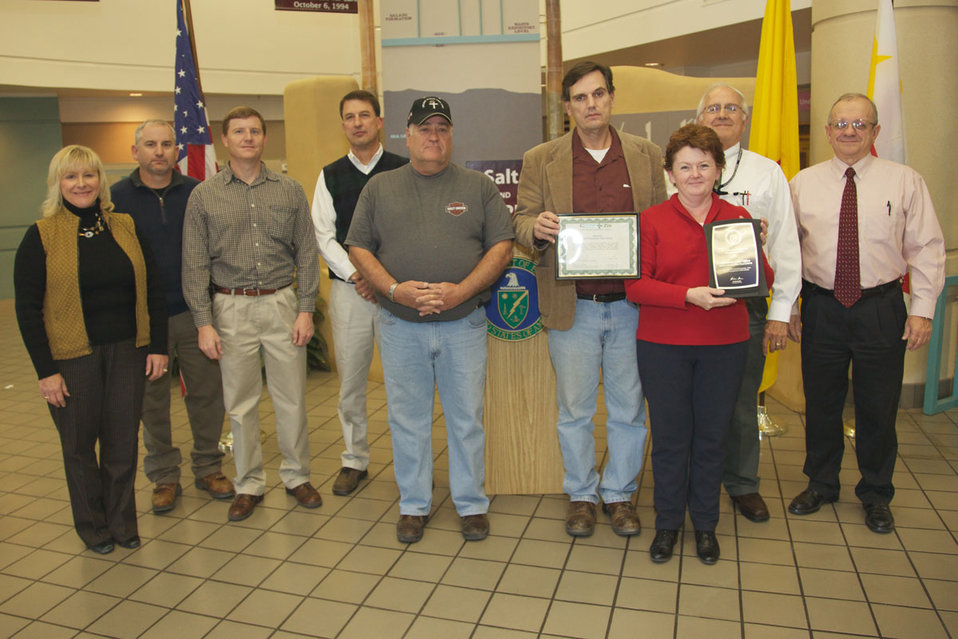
Environmental Awards at Carlsbad

New Mexico and DOE recently recognized the Carlsbad Field Office (CBFO) for environmental excellence in the Waste Isolation Pilot Plant (WIPP) South Access Road project. The New Mexico Environment Department (NMED) recently selected CBFO for a Bronze Award under its Green Zia Environmental Leadership Program, and CBFO was a recipient of one of the 2011 DOE Sustainability Awards. In addition to CBFO, the WIPP team included members of Washington TRU Solutions (WTS), LLC, the WIPP management and operating contractor; WTS subcontractors Constructors Inc. and Pettigrew & Associates; and the U.S. Department of Interior Bureau of Land Management.

In this photo, CBFO Interim Manager Ed Ziemianski (far right) presents the Bronze Award and the 2011 DOE Sustainability Award to several recipients. Shown from left to right are Debra Hicks and Randy Pettigrew of Pettigrew & Associates; Owen Lofton of the Bureau of Land Management; Hank Carey and Ronnie Crockett of WTS; Dan Ferguson of CBFO; and Judy McLemore and Bob Kehrman, both of Washington Regulatory and Environmental Services, WTS environmental consulting subcontractor.